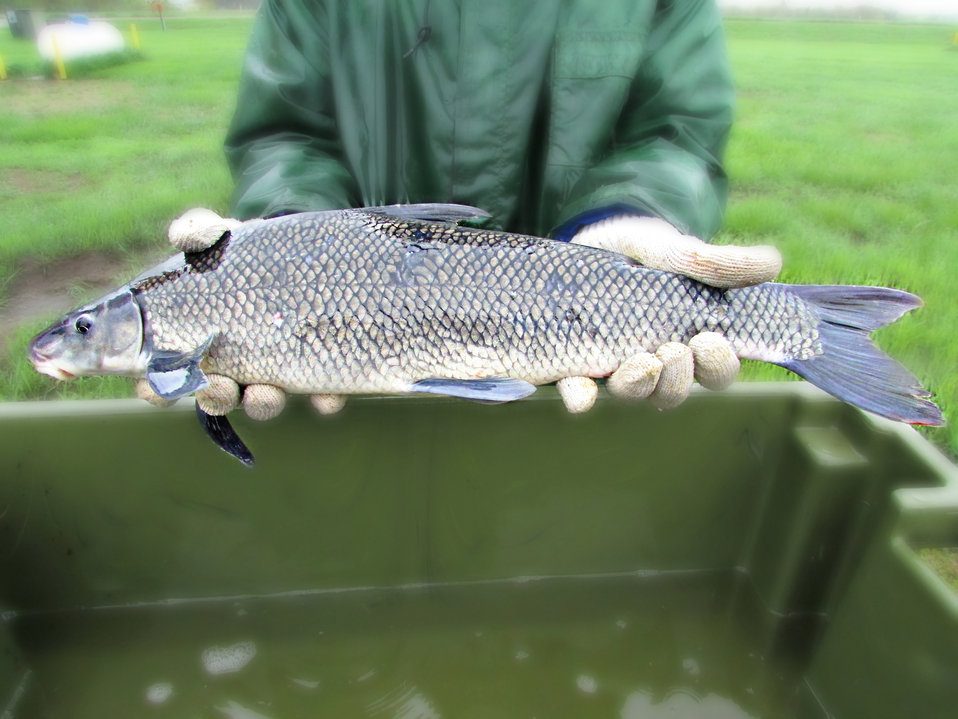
Blue Sucker Work

Blue suckers are native to the Missouri River and are considered 'near threatened'.

2013 was a trial year for spawning blue suckers at the GPNFH. We successfully gathered milt and eggs, but were unable to get fertilization.